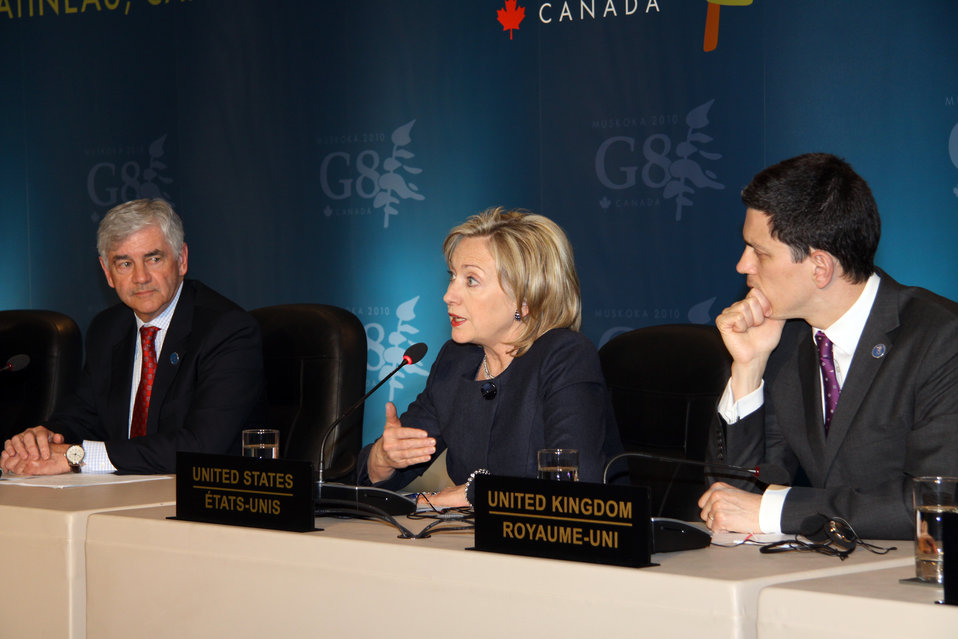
Secretary Clinton Participates in G8 Foreign Ministers Meeting Press Conference

U.S. Secretary of State Hillary Rodham Clinton, Canadian Minister of Foreign Affairs Lawrence Cannon (left) and U.K. Foreign Minister David Miliband (right) participate in a press conference during the G8 Foreign Ministers Meeting in Ottawa, Canada March 29, 2010.